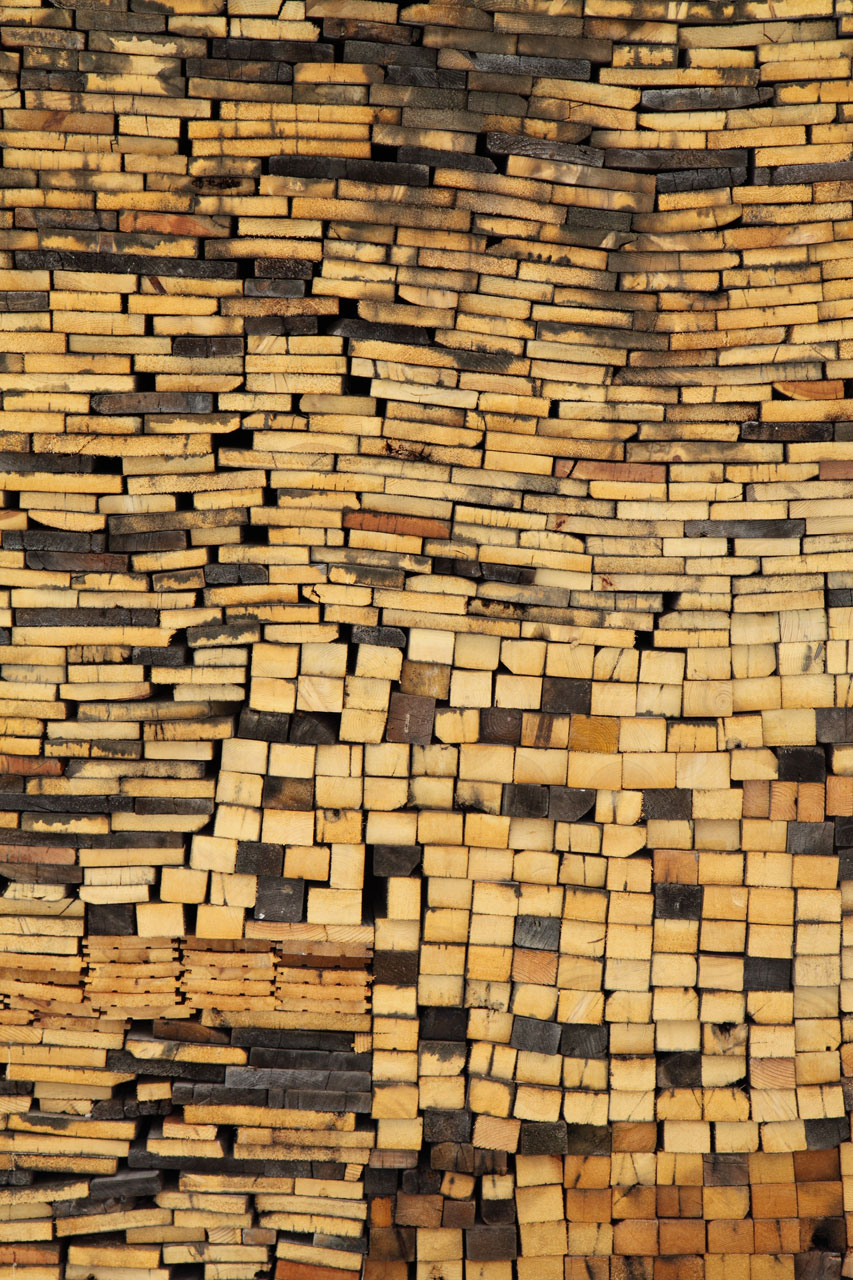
Firewood pattern background.